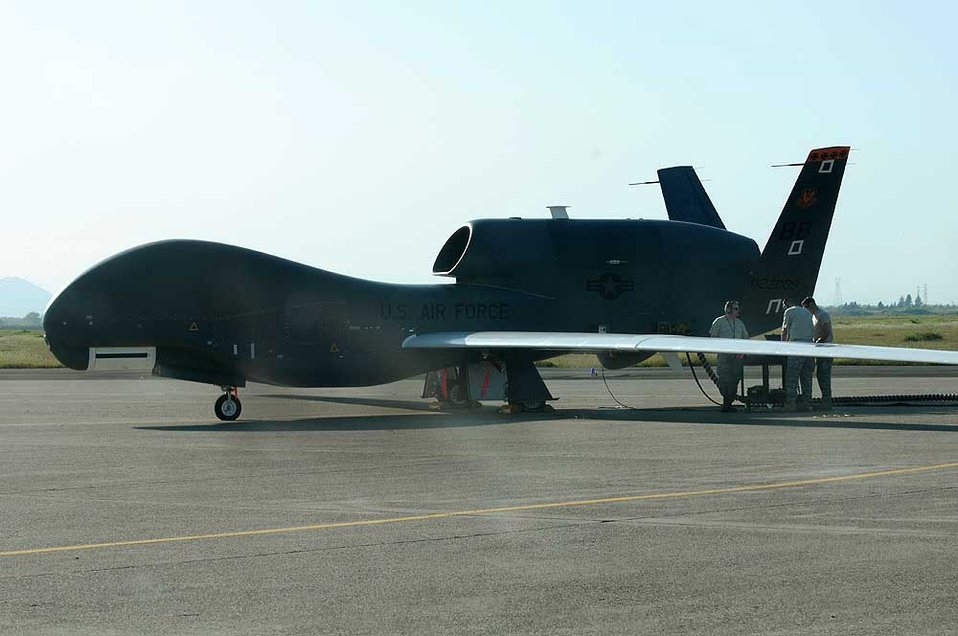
Global Hawk over Canada

Airmen from the 9th Aircraft Maintenance Squadron at Beale Air Force Base, Calif., prepare to launch an RQ-4 Global Hawk April 8, 2010, on an operational mission. During the flight, the aircraft flew over Canadian airspace for the first time in non-training status.